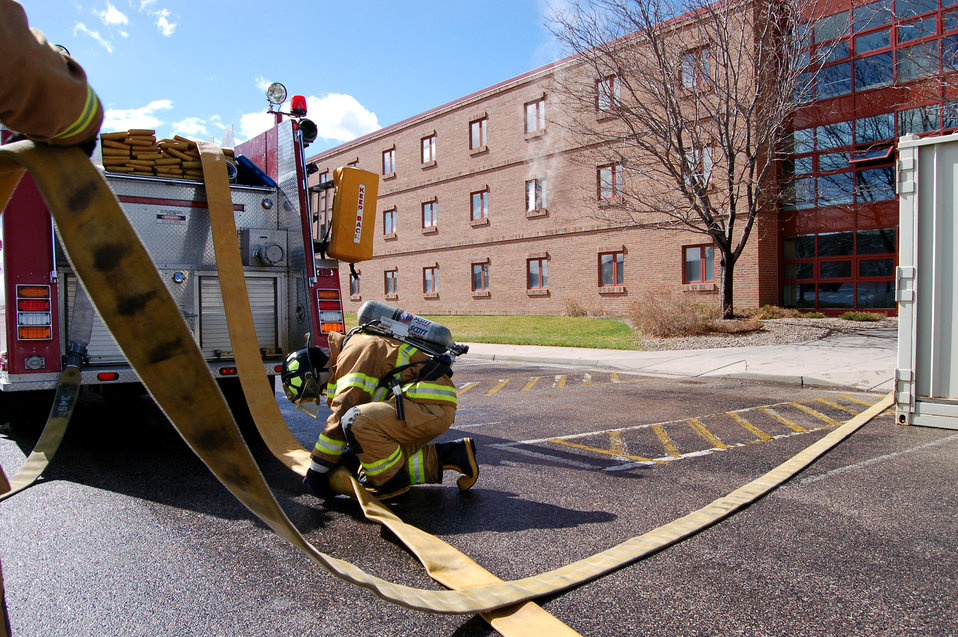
Firefighter lives his childhood dream

A firefighter disconnects a large diameter hose during a firefighting exercise April 10 at Peterson Air Force Base, Colo. The training is essential to keeping the firefighters sharp and ready to perform their duties in a moment's notice.